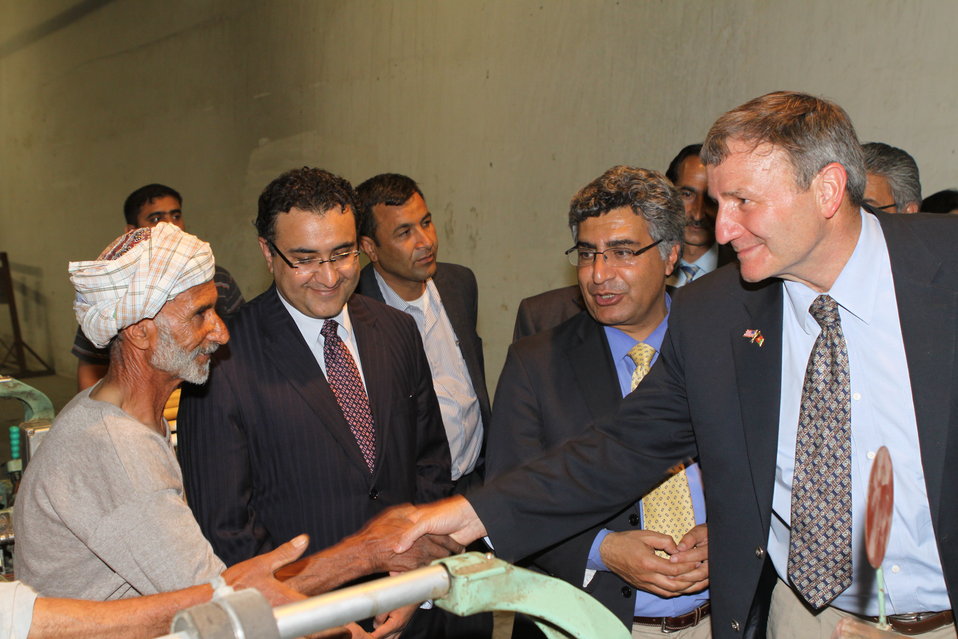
100525 Hirat Textile Company 766